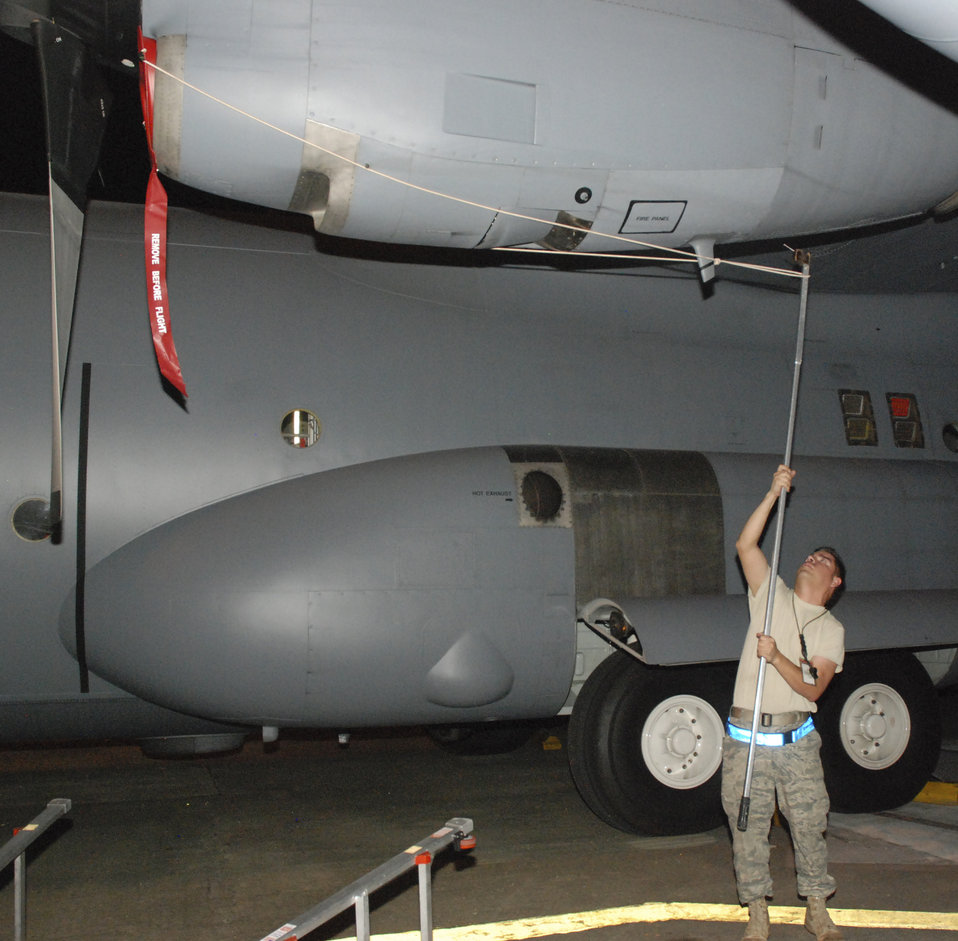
Aircrew, maintainers tackle Haiti relief effort

Tech. Sgt. Steve Cisneros inserts a protective plug for a C-130 Hercules engine air intake chamber Jan. 27, 2010, at Muniz Air Base, Puerto Rico. Sergeant Cisneros is a 35th Expeditionary Airlift Squadron crew chief from the 302nd Airlift Wing, Air Force Base, Colo.